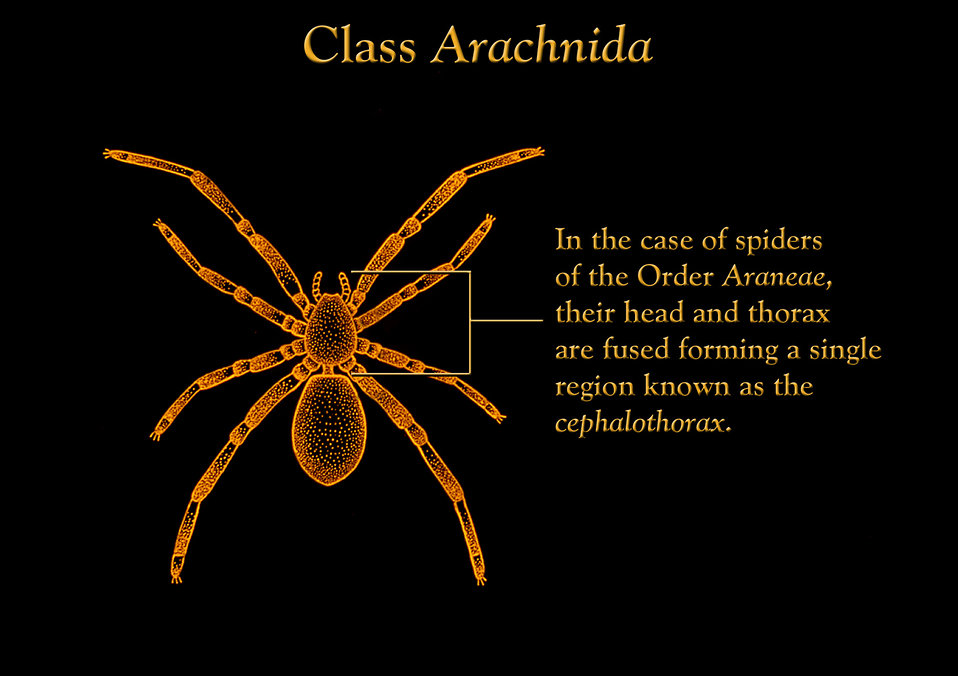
This drawing depicts the anatomic features found in spiders, members of the Class Arachnida, Order Araneae.